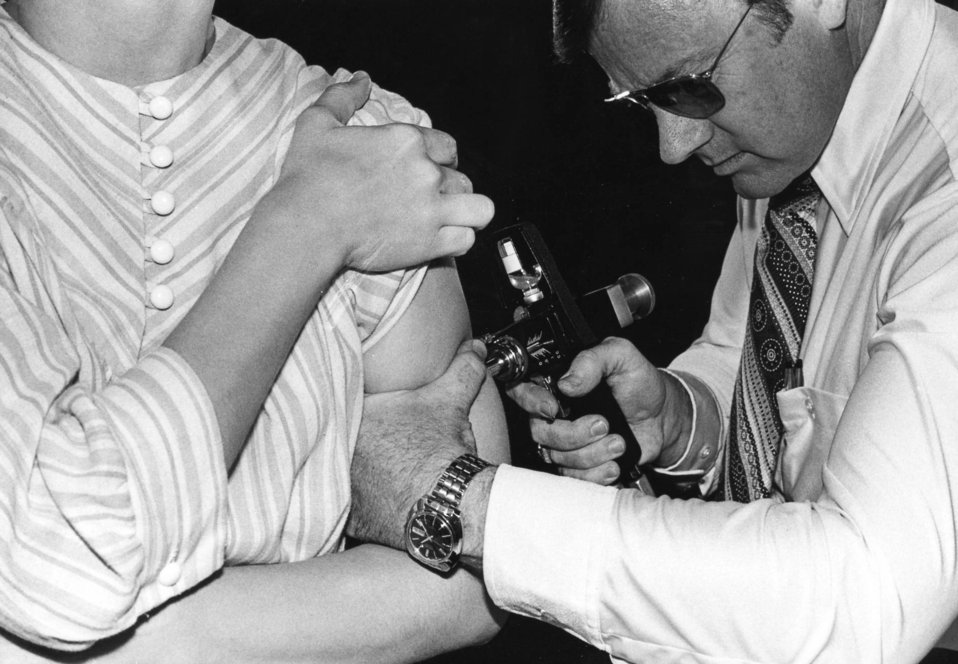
This 1976 photograph showed an adult receiving a vaccination with a jet injector during the swine flu nationwide vaccination campaign, which began October 1, 1976.